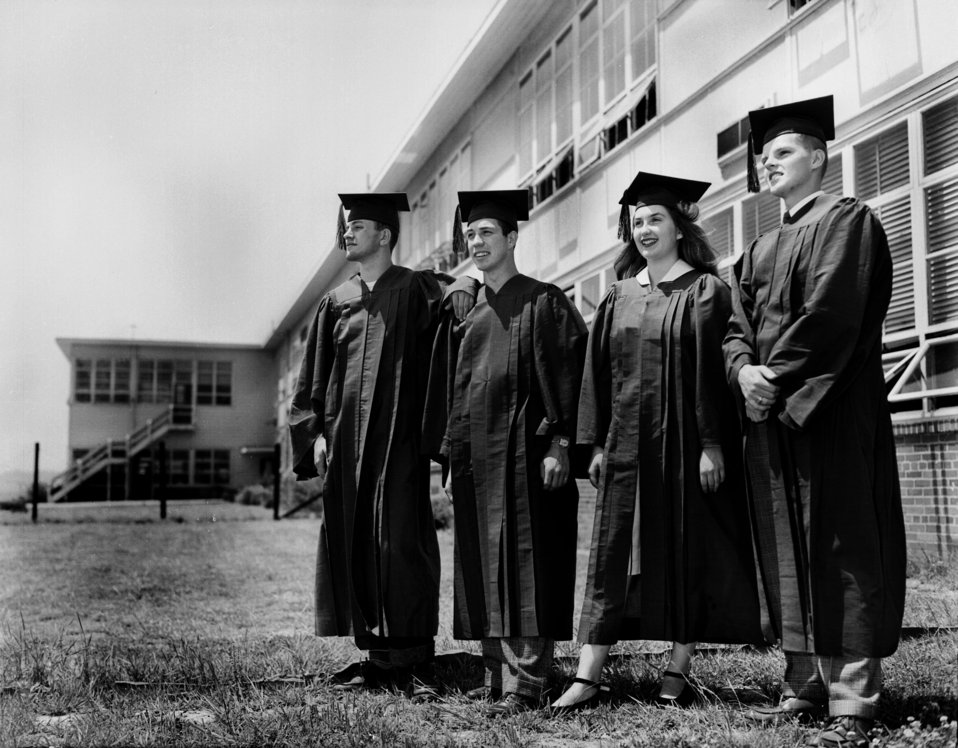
Oak Ridge High School Class Officers 1948

5018a DOE photo Ed Westcott 6-2-1948 Oak Ridge Tennessee